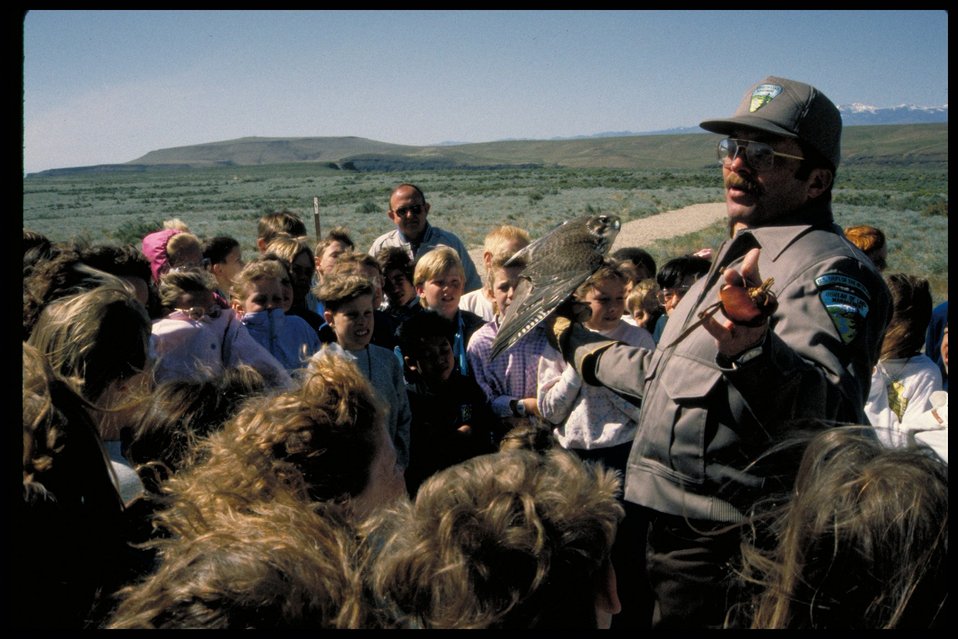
Education Birds of Prey National Conservation Area BOP Owyhee Field Office LSRD Lower Snake River District